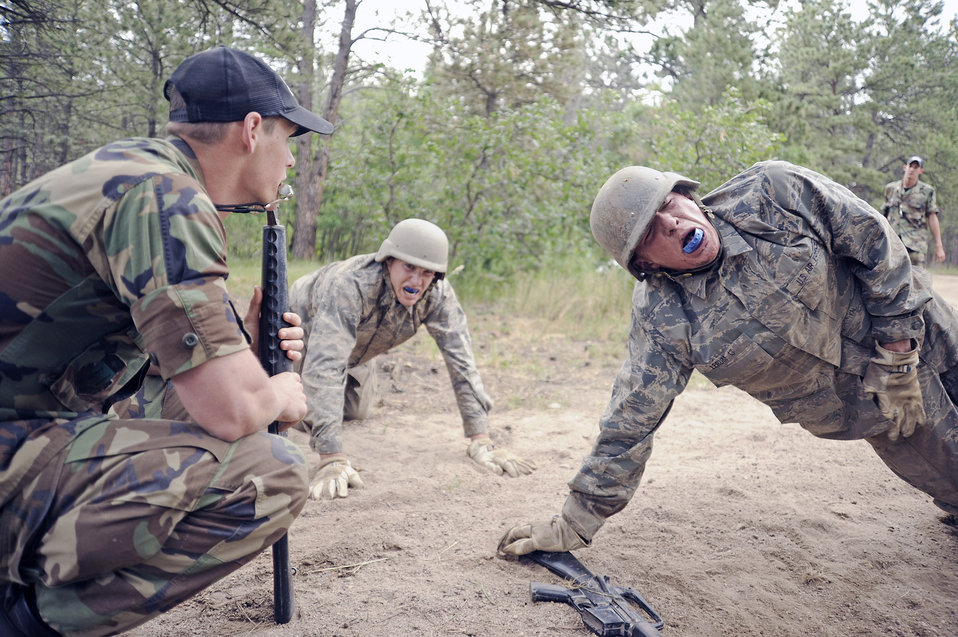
Academy basic field training at Jacks Valley

U.S. Air Force Academy cadets receive encouragement from the cadet cadre during push-ups on the Jacks Valley Assault Course July 21 near Colorado Springs, Colo. Basic cadet training started June 25 and continues through Aug. 1. The fall academic semester begins Aug. 6.